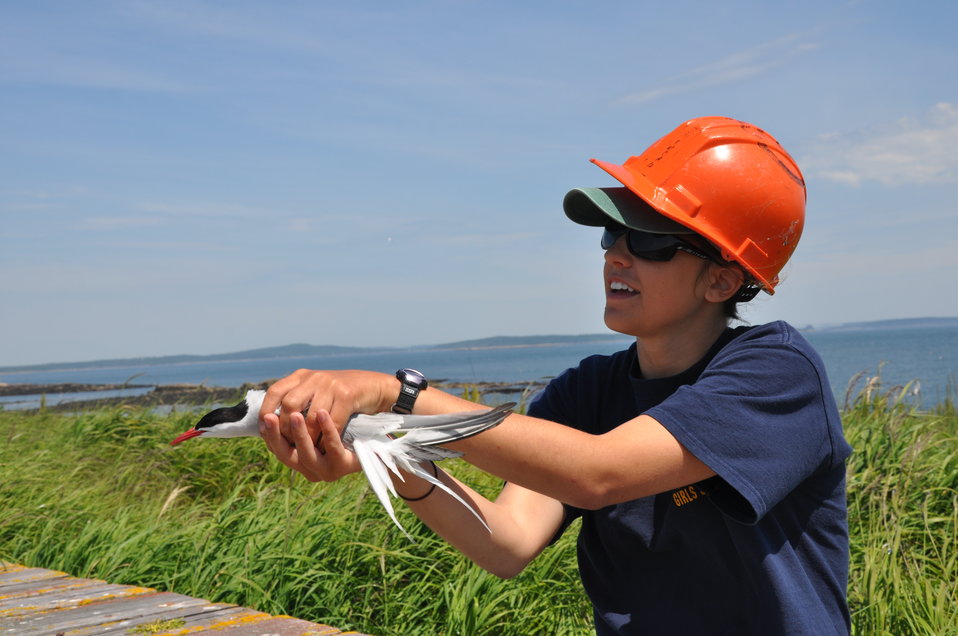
Island Researcher Releasing Tern

Petit Manan Island, Maine Coastal Islands NWR. Summer with the Seabirds blog: mainecoastalislands.wordpress.com/2010/08/01/terns/